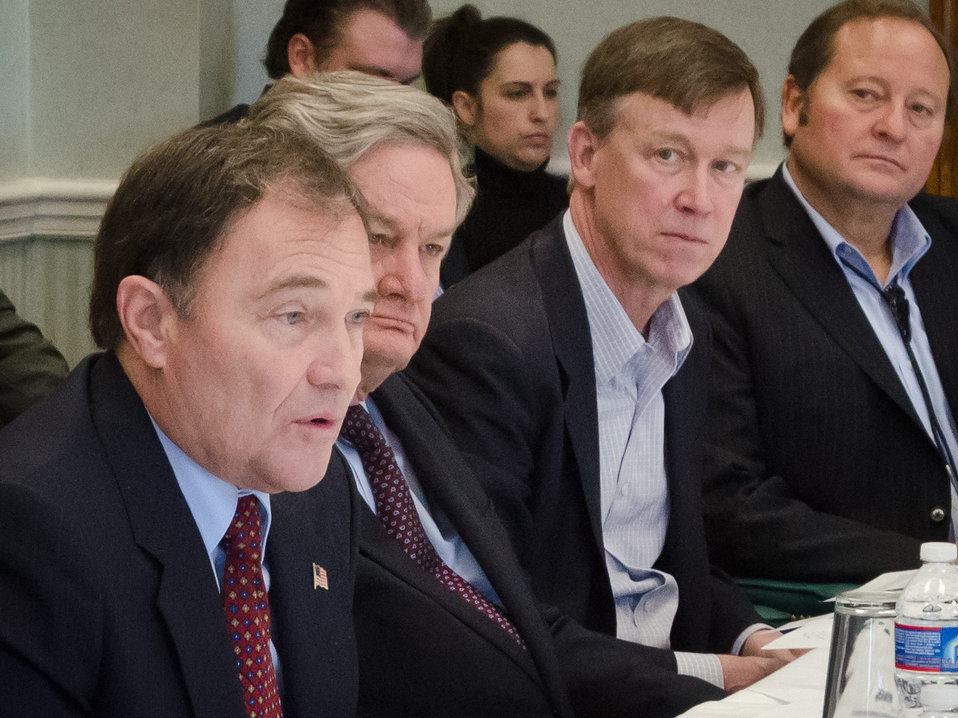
Western Governors Association Vice-Chairperson Utah Governor Gary Herbert (left) talked to Agriculture Secretary Tom Vilsack who hosted a breakfast for Western Governors, and Interior Secretary Ken Salazar, at the Lincoln Room at the United States Department of Agriculture headquarters, in Washington, D.C., on Sunday, February 26, 2012.